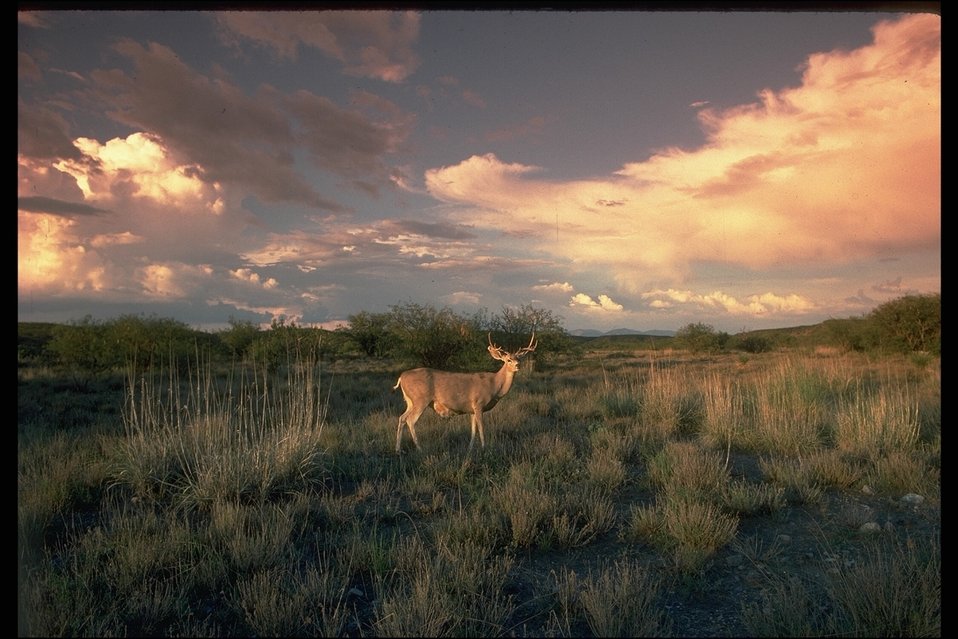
A beautiful Arizona with a beautiful member of Arizona's wildlife in the foreground.